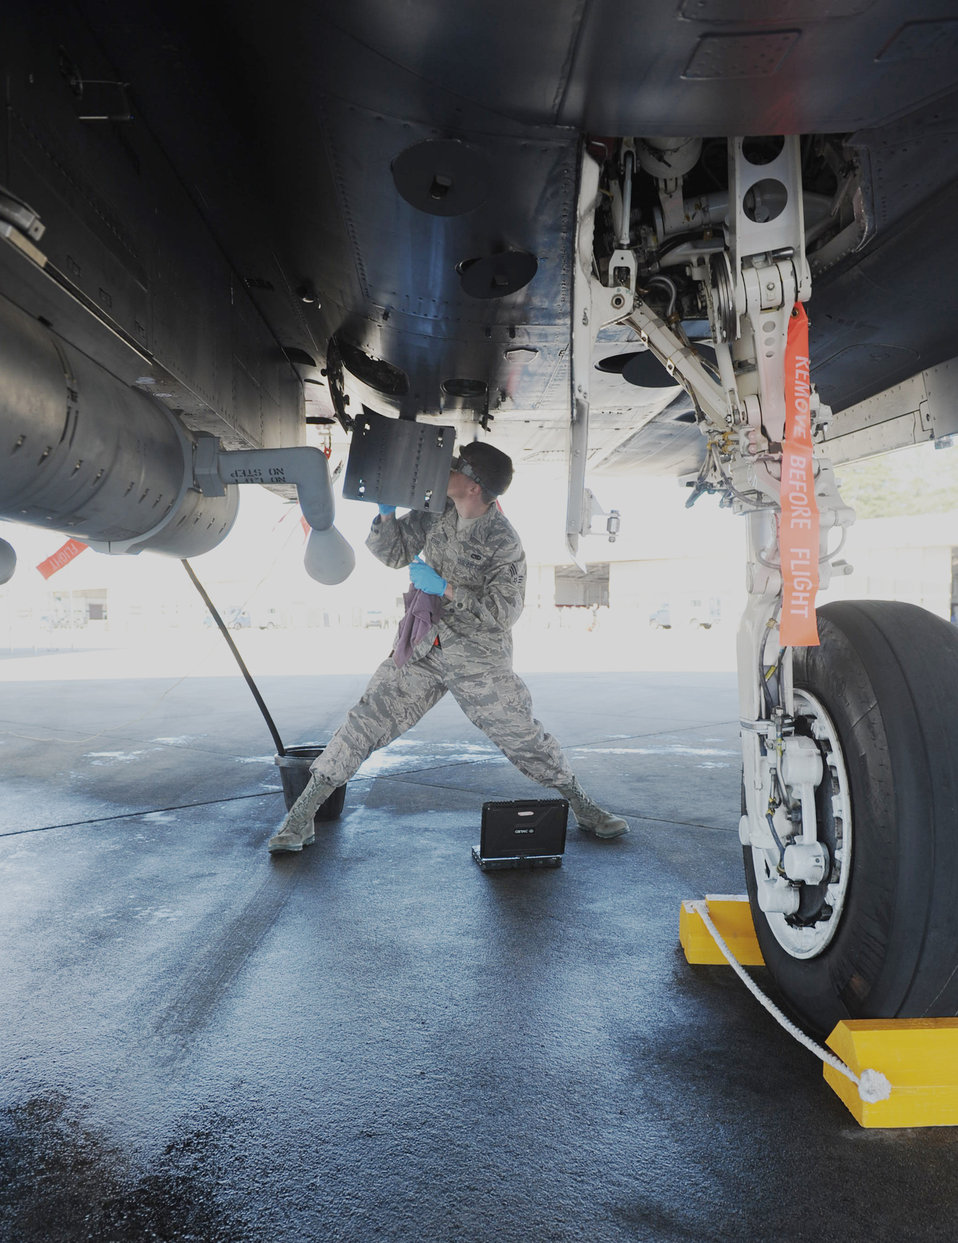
Getting down to business

Senior Airman Bobby Kerr, 307th Fighter Squadron crew chief, opens a panel underneath an F-15E Strike Eagle March 19, 2010, on the flightline at Seymour Johnson Air Force Base, N.C.